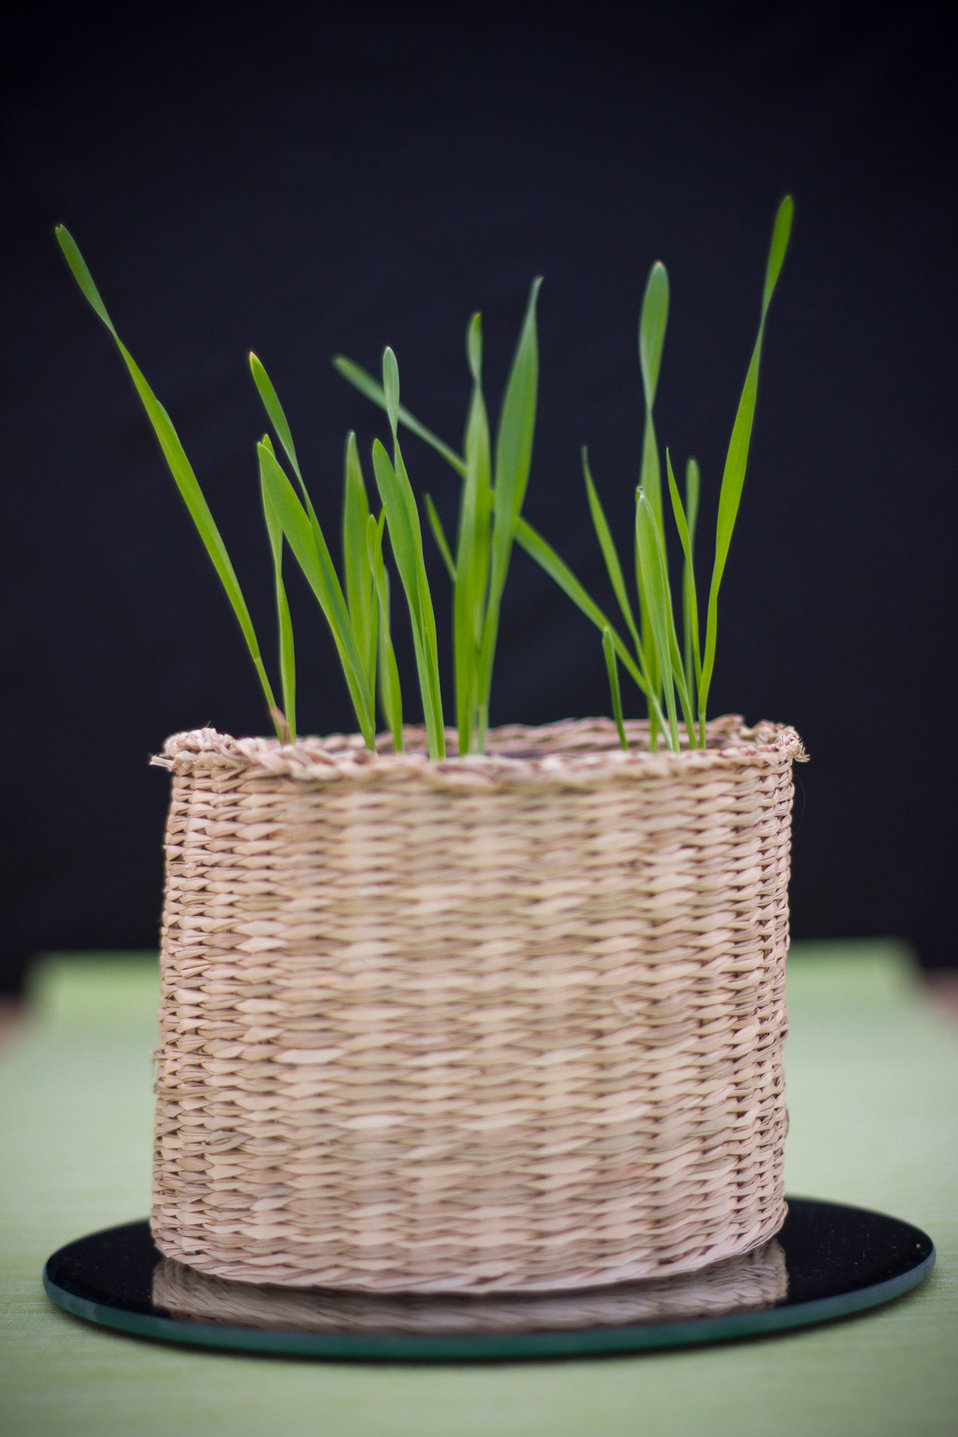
Grass in the pot.